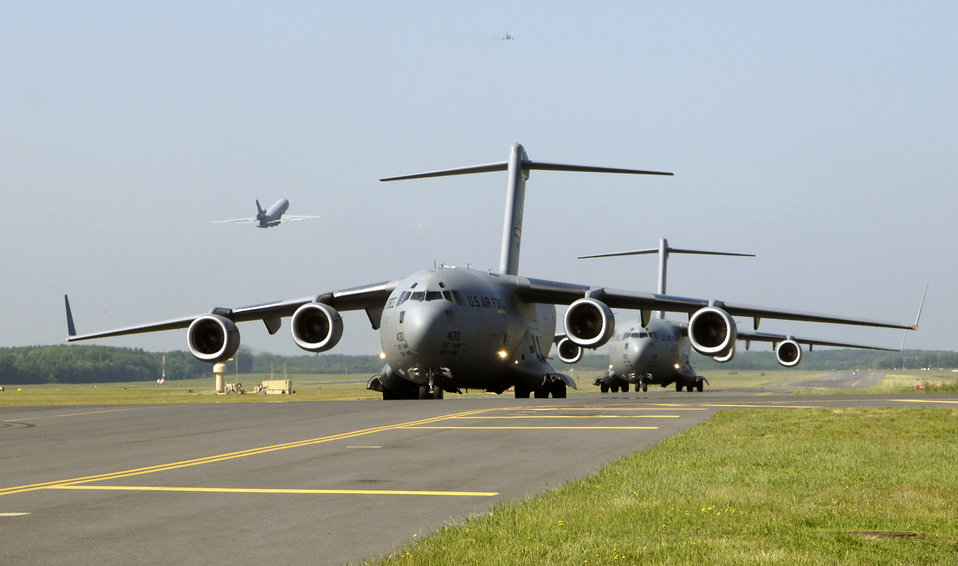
Elephant Walk

KC-10 Extenders and C-17 Globemaster IIIs launch from the McGuire Air Force Base, N.J., flightline during the emergency response exercise Elephant Walk. This is the first time C-17s and KC-10s have been paired in an exercise. Sixteen aircraft launched from McGuire on Friday, June 30, as part of the exercise.